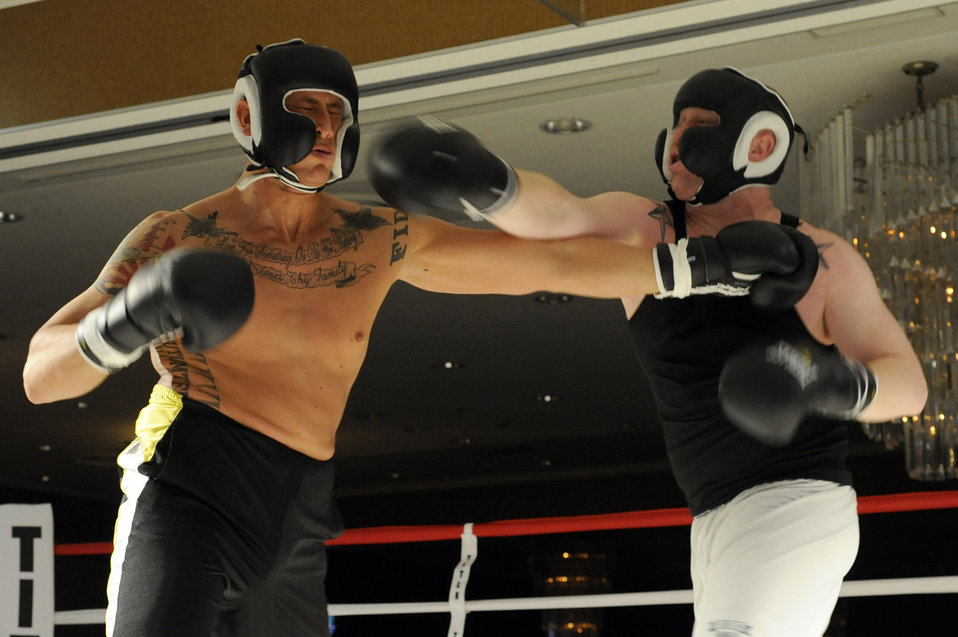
Mama said knock you out!

Joshua Formanek (left) and Jordan Outzen throw punches during